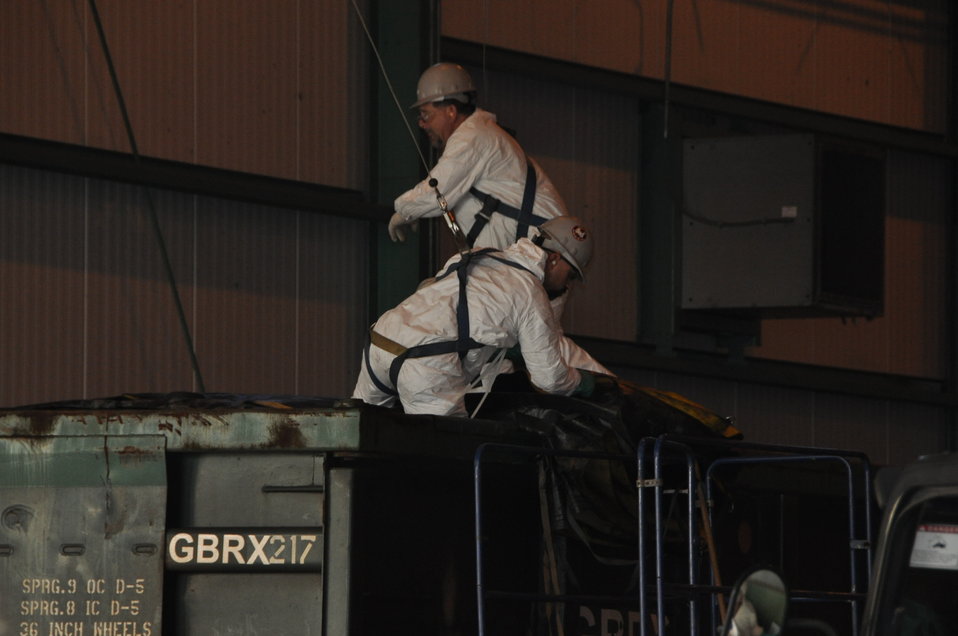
October 2009, Wrapping rail loads